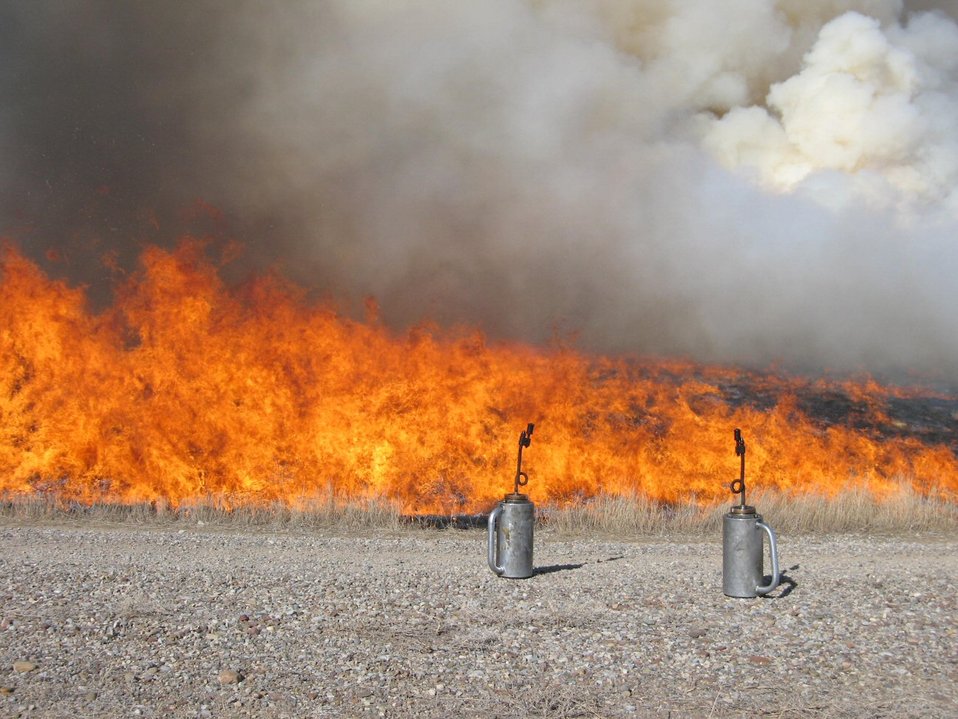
Drip Torches

A drip torch is an essential fire tool. The end of the torch is lit on fire and loop in the spout prevents fire from going up into the canister. Fuel for the drip torch is of a mix of diesel and gasoline.